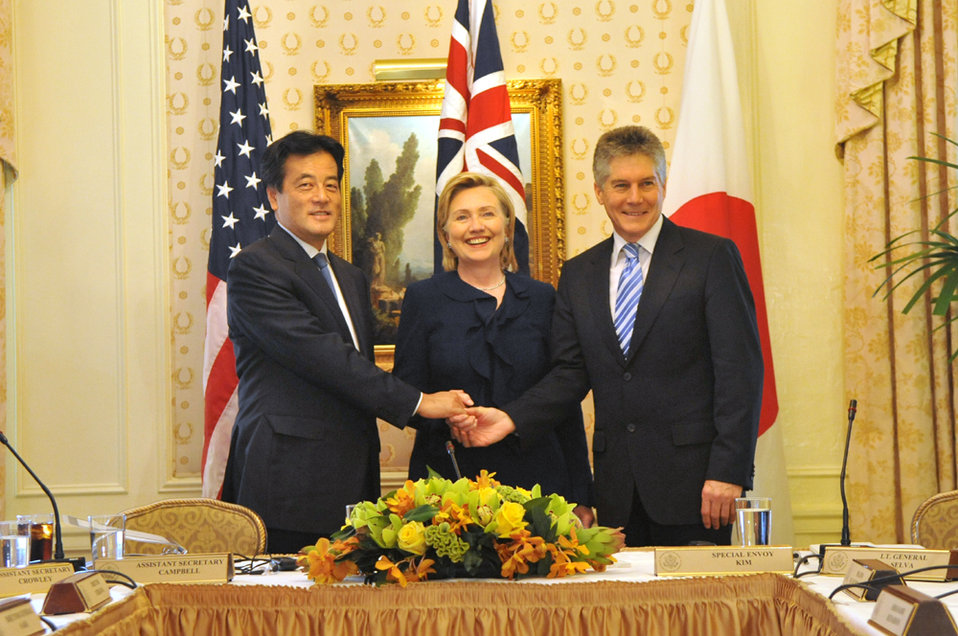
UNGA 2009: State Hillary Rodham Clinton Participates in a Trilateral Strategic Dialogue With Australia and Japan

U.S. Secretary of State Hillary Rodham Clinton participates in a Trilateral Strategic Dialogue with Australia and Japan at the Waldorf Astoria hotel during the 64th Session of the UN General Assembly in New York City, New York September 22, 2009.